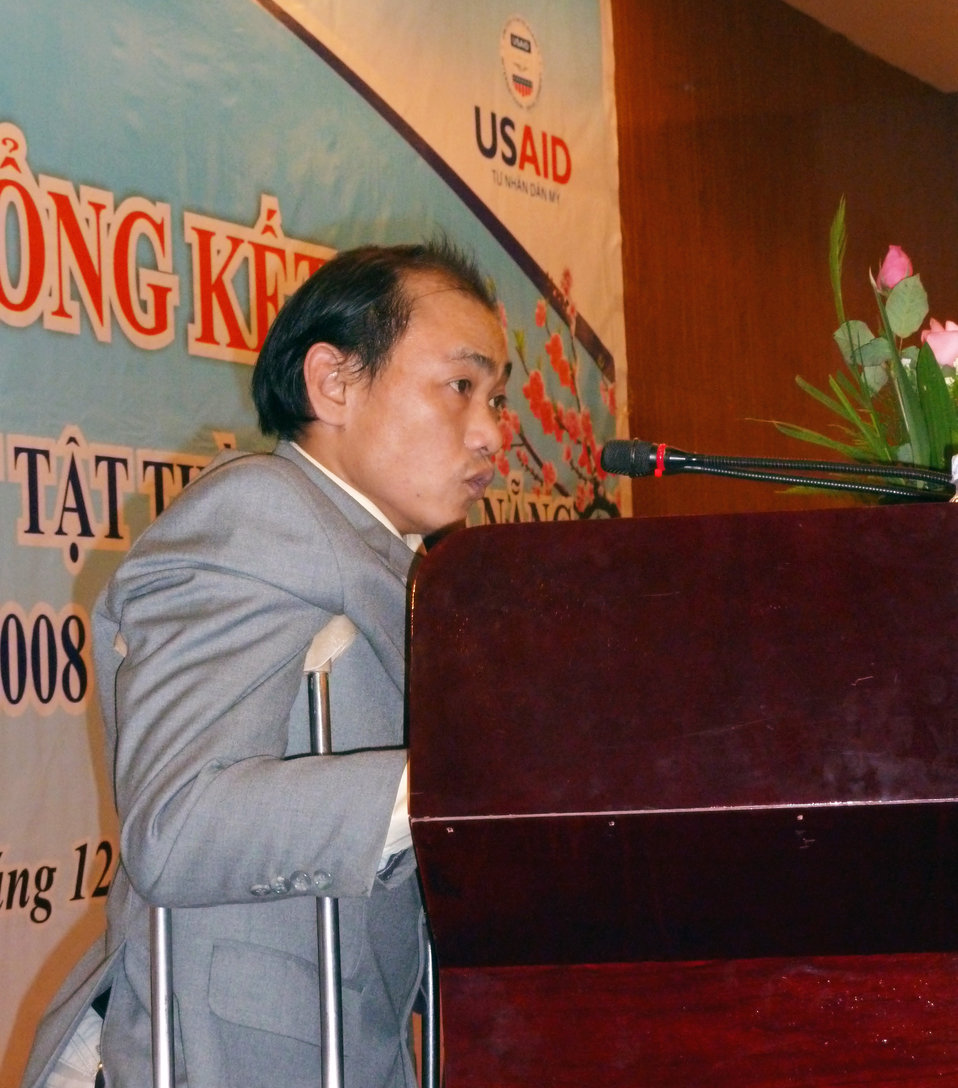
Danang Disability Workshop: Mr. Truong Cong Nghiem

Mr. Nghiem is the leader of a disabled persons organization (DPO), one of many to benefit from the USAID projects.

Close out workshop of three-year USAID program in disabilities, Danang